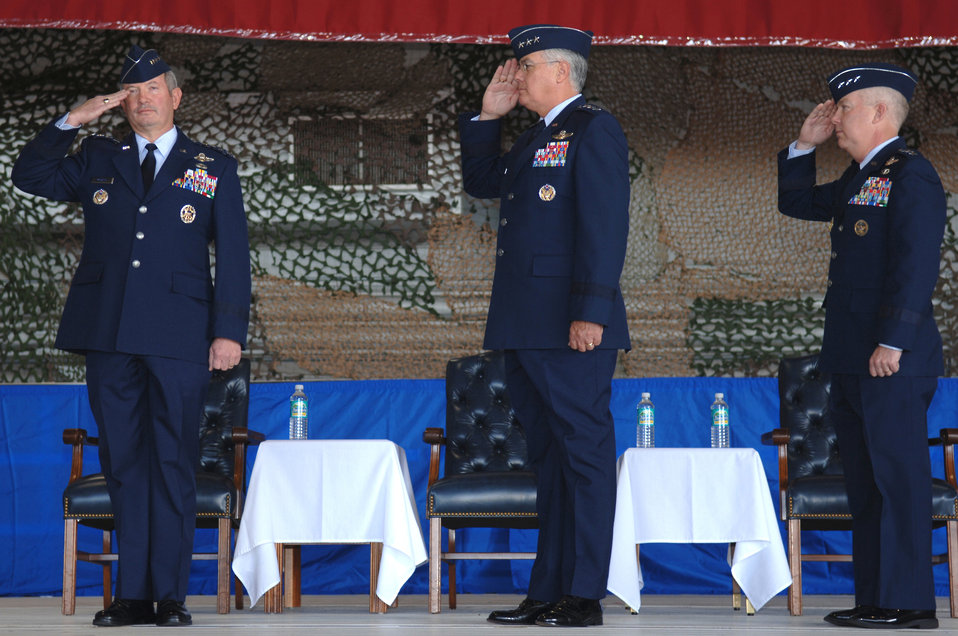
AFSOC welcomes new commander

Air Force Vice Chief of Staff General Duncan McNabb, Lt. Gen. Mike Wooley and Lt. Gen. Donnie Wurster render salutes during the Air Force Special Operations Command change of command ceremony Nov. 27 at Hurlburt Field, Fla.